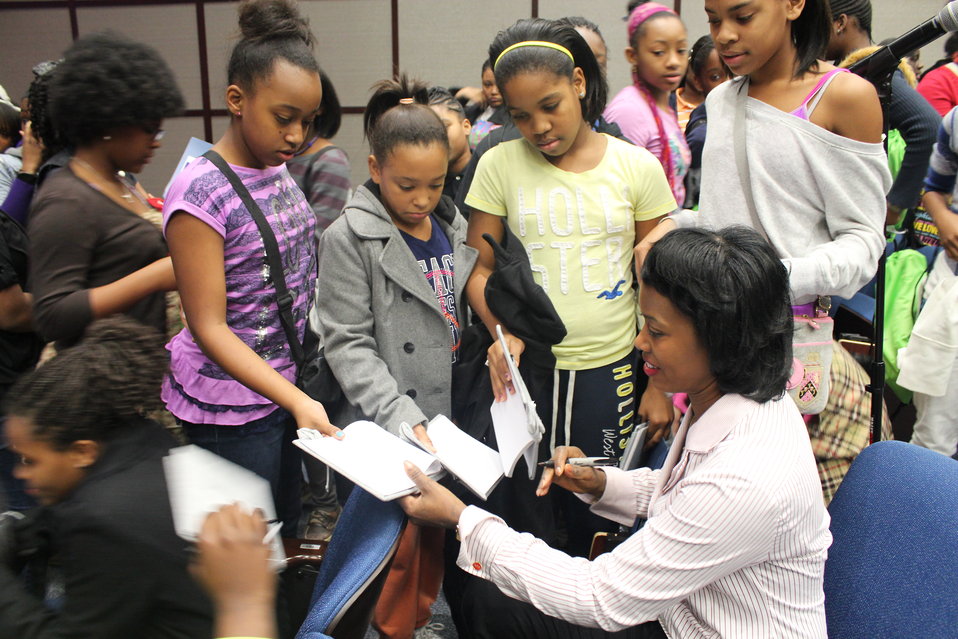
Spelman Girls Institute November 2012

Dot Harris shares her contact information with audience members to connect them with Department of Energy programs.